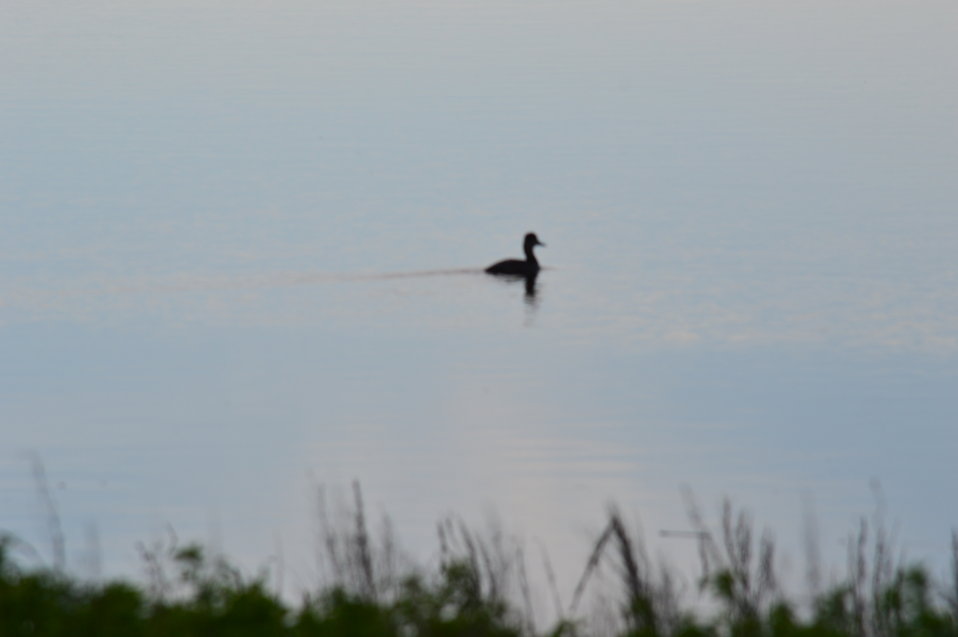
Waterfowl

Scenery and wildlife at Sand Lake National Wildlife Refuge in South Dakota